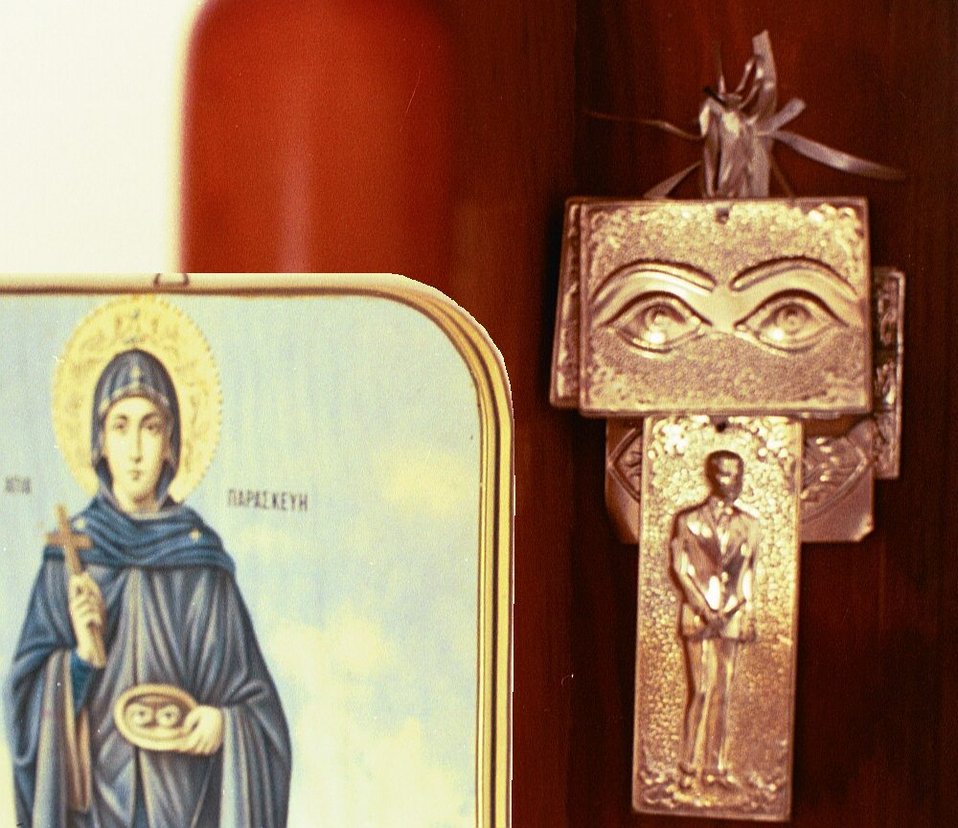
An ikon of Aghia Paraskevi and some votive objects - these have a specific name: tamata. Photographed in the chapel dedicated to her (see below) above the Skotino cave, Iraklio, Kriti in 2001 May. A life of Aghia Paraskevi.